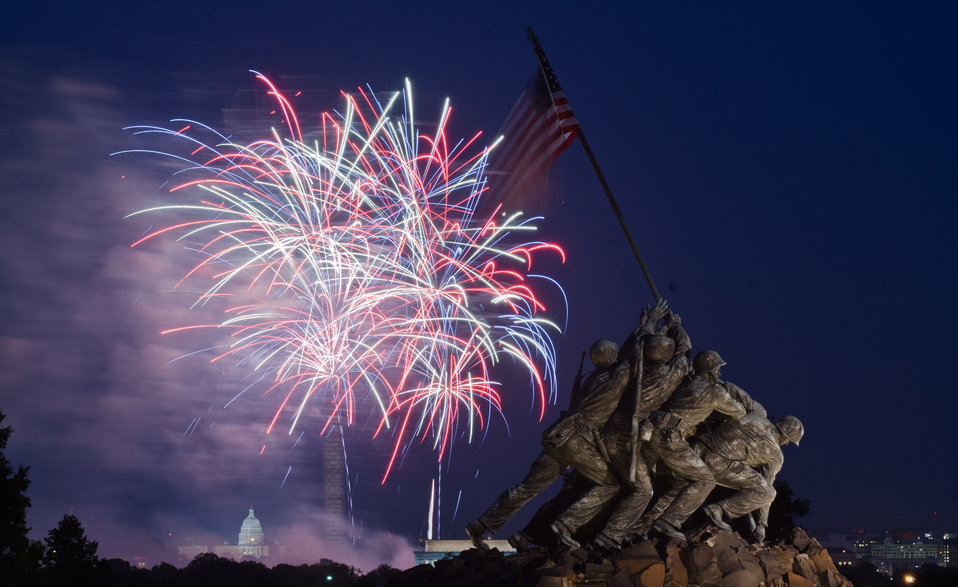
Independence Day celebration fireworks are seen from the Iwo Jima, U.S. Marine Corps Memorial in Arlington, VA on Jul. 4, 2013. In the distance are the Lincoln Memorial, the U.S. Department of Agriculture (USDA) Yates Building (dark red brick building), the Washington Monument (with scaffolding), and the U.S. Capitol building in Washington, D.C.